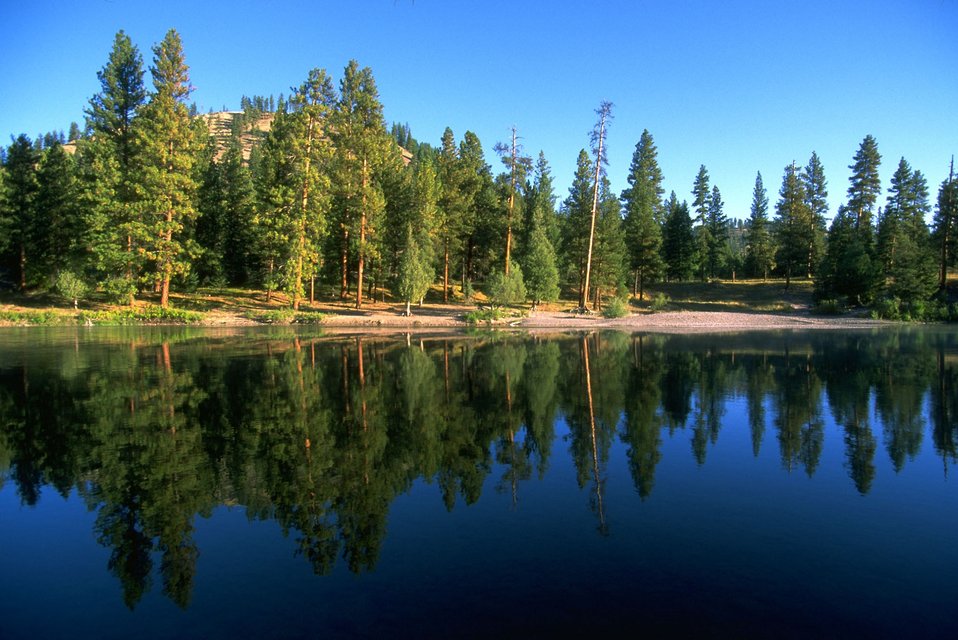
Red Rocks day-use area of Blackfoot River in the early morning